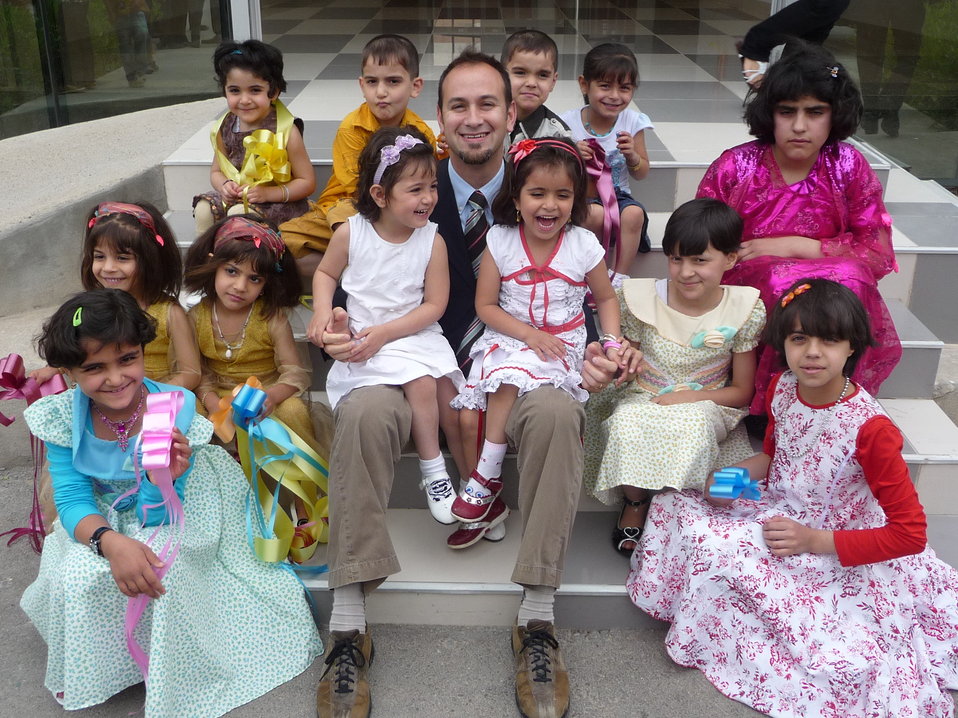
Dan Gedacht Speaks With Iraqi Children

Dan Gedacht (Embassy Baghdad) interacts with residents of USAID-funded orphanage/eldercare facility in Erbil, Iraqi Kurdistan, Iraq, April 2010.